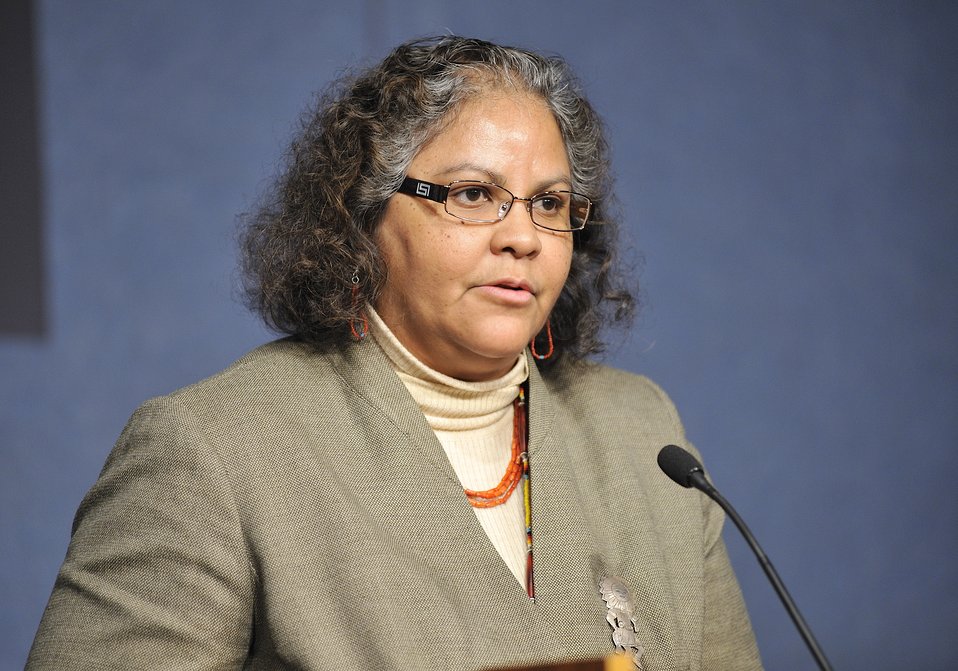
Pilar Thomas, Mistress of Ceremony and Deputy Director of the Office of Indian Energy Policy, speaks at Martin Luther King Jr. Day Celebration at DOE headquarters.